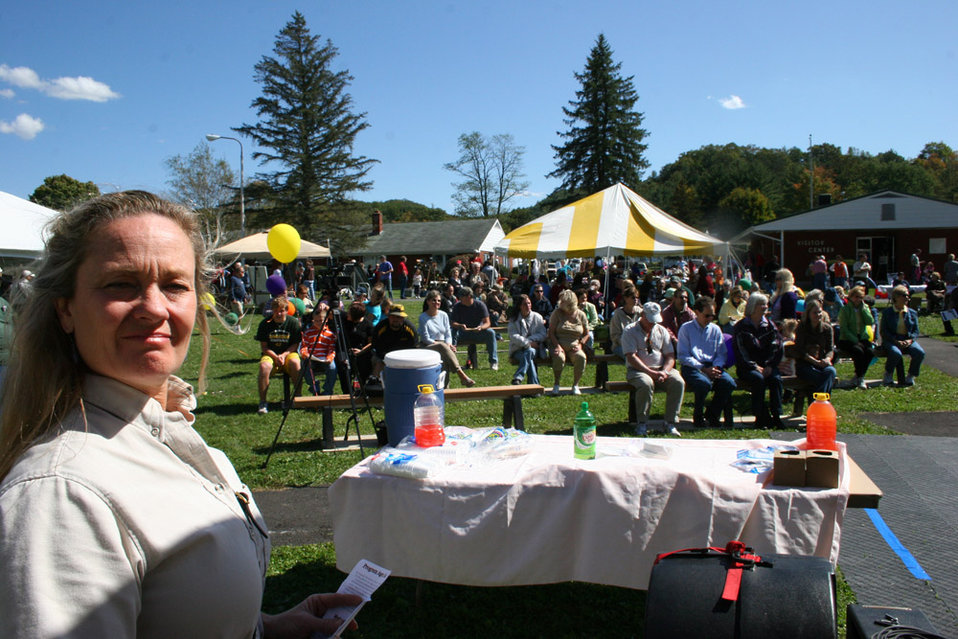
Freshwater Folk Festival

The 5th Annual Freshwater Folk Festival at White Sulphur Springs National Fish Hatchery in West Virginia.Credit: USFWS